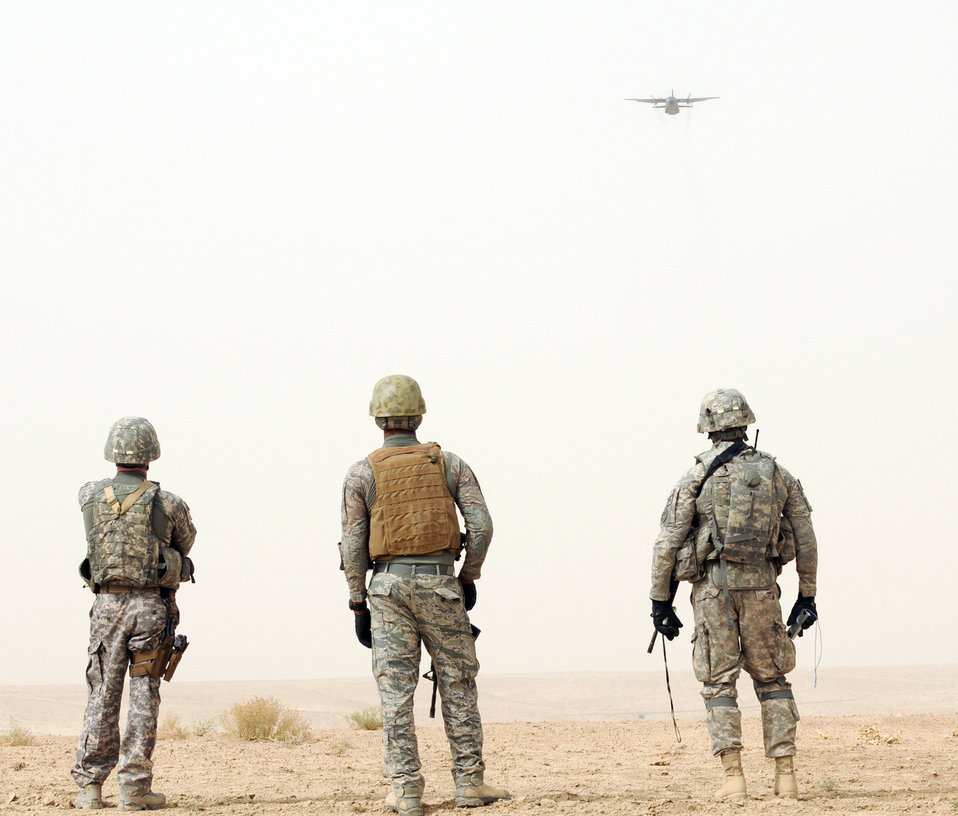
Afghan progress

Ground security and recovery teams watch as a C-27 Spartan conducts airdrop operations in the skies above Afghanistan Aug. 26, 2010. The C-27 Spartan is part of the newly developed Afghan air force air fleet and brings new capabilities to the air force and the Afghan government. .